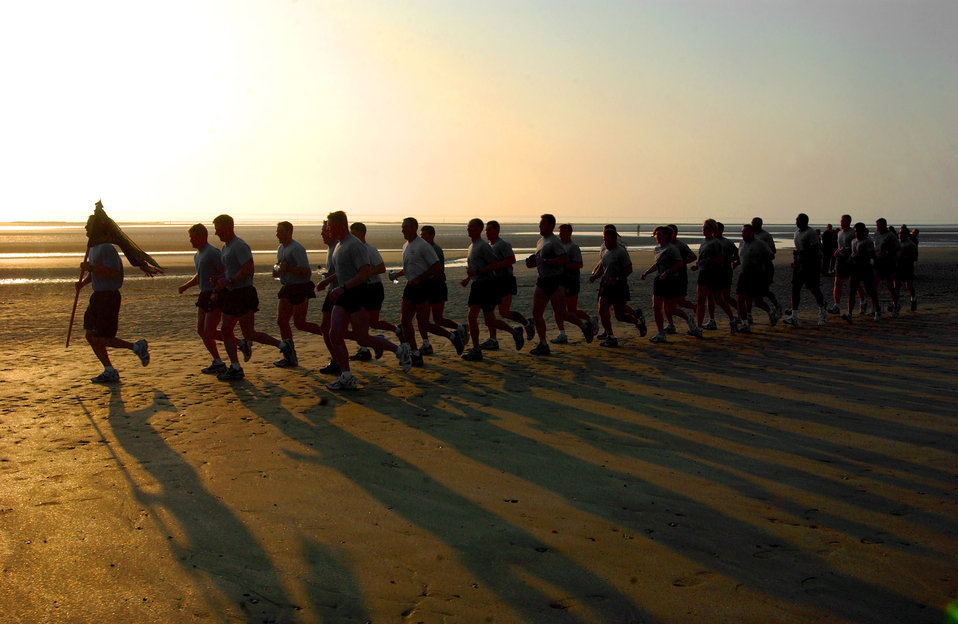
Run of remembrance

ROYAL AIR FORCE MILDENHALL, England -- People from the 321st Special Tactics Squadron take a 3-mile morning run on Utah Beach here exactly 60 years after D-Day on June 6. The run was to honor all those who gave their lives during the Normandy Invasion on in 1944.